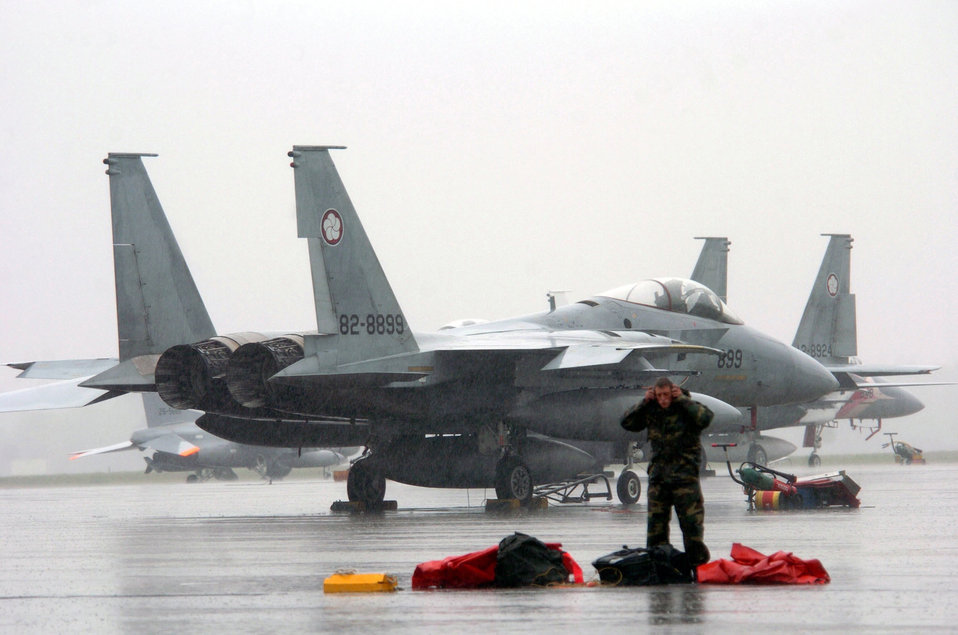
Let it rain

HYAKURI AIR BASE, Japan -- Airman 1st Class Cason Conley is caught in heavy downpour after launching his aircraft during exercise Keen Sword here Nov. 16. Keen Sword is a bilateral defense exercise designed to practice defending Japan against foreign aggression. Airman Conley is a crew chief assigned to the 67th Aircraft Maintenance Unit at Kadena Air Base, Japan.